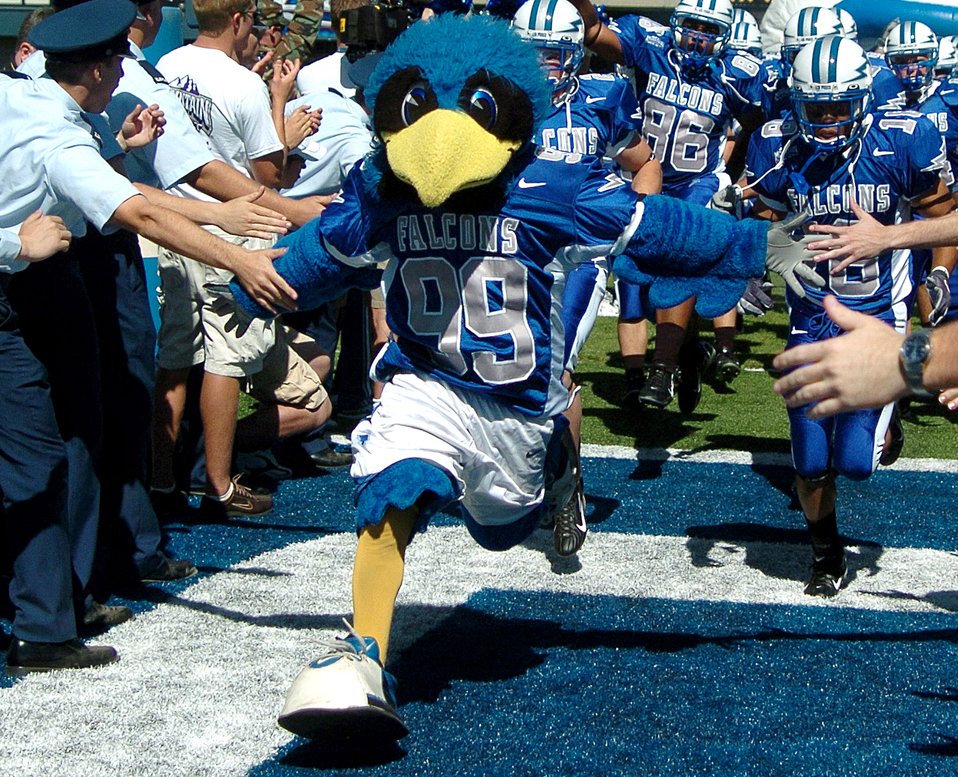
'The Bird' vies for mascot of the year

The U.S. Air Force Academy mascot,